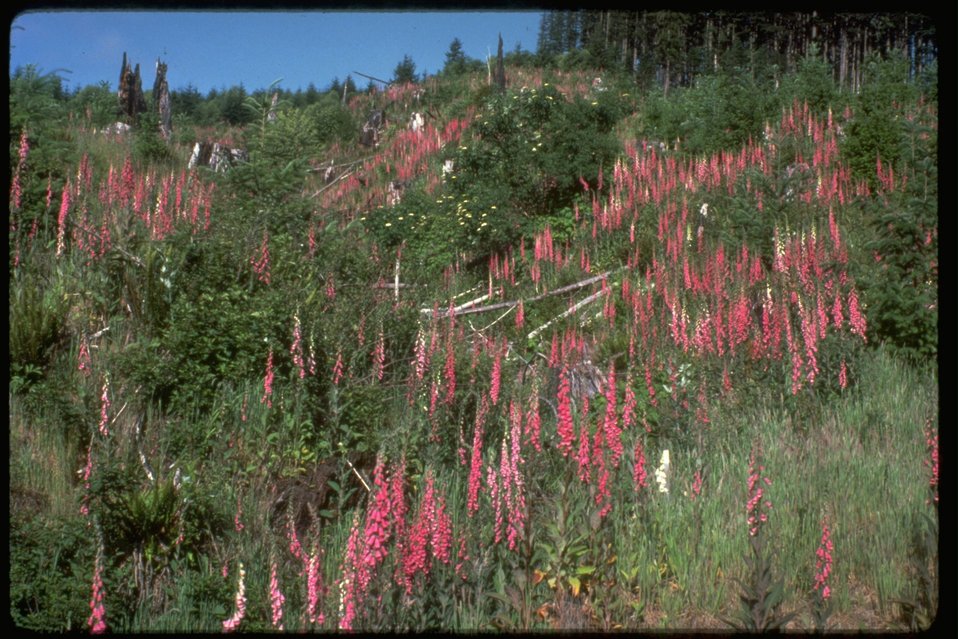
Rhododendron, of the Ericaceae Family, on Table Rock Mountain.